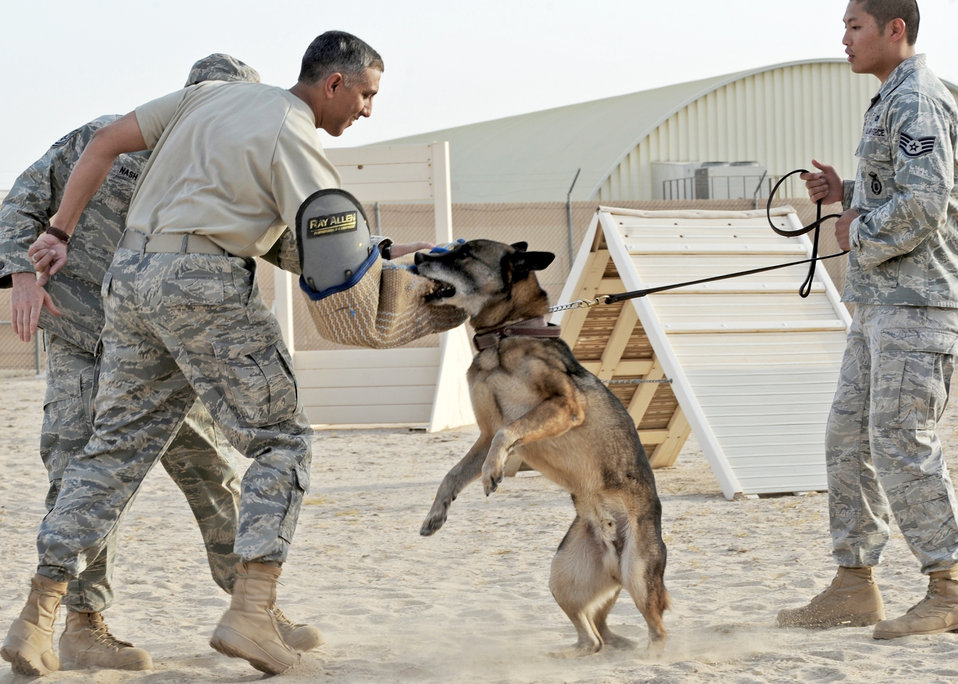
386 ESFS MWD

Col. Rizwan Ali wears a dog-training sleeve as he experiences the training of military working dogs July 21, 2010, in Southwest Asia. Colonel Rizwan is the commander of the 386th Expeditionary Mission Support Group.